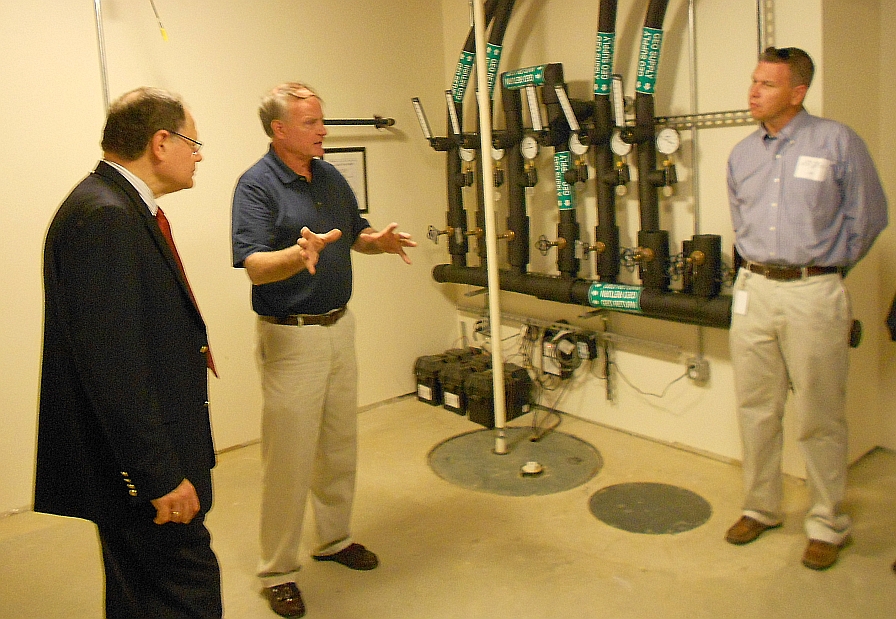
Mayor of Gaithersburg and City Council members Tour NZERTF

Dr. Hunter Fanney (Center) Chief of the Building Environment Lab in NIST’s Engineer Lab (EL) describes the NIST’s Net Zero Energy Residential Test Facility’s Earth Coupled Heat Pump Systems to Gaithersburg Mayor Sidney Katz (far left) and Gaithersburg City Council Member Henry F. Marraffa, Jr. (far right).